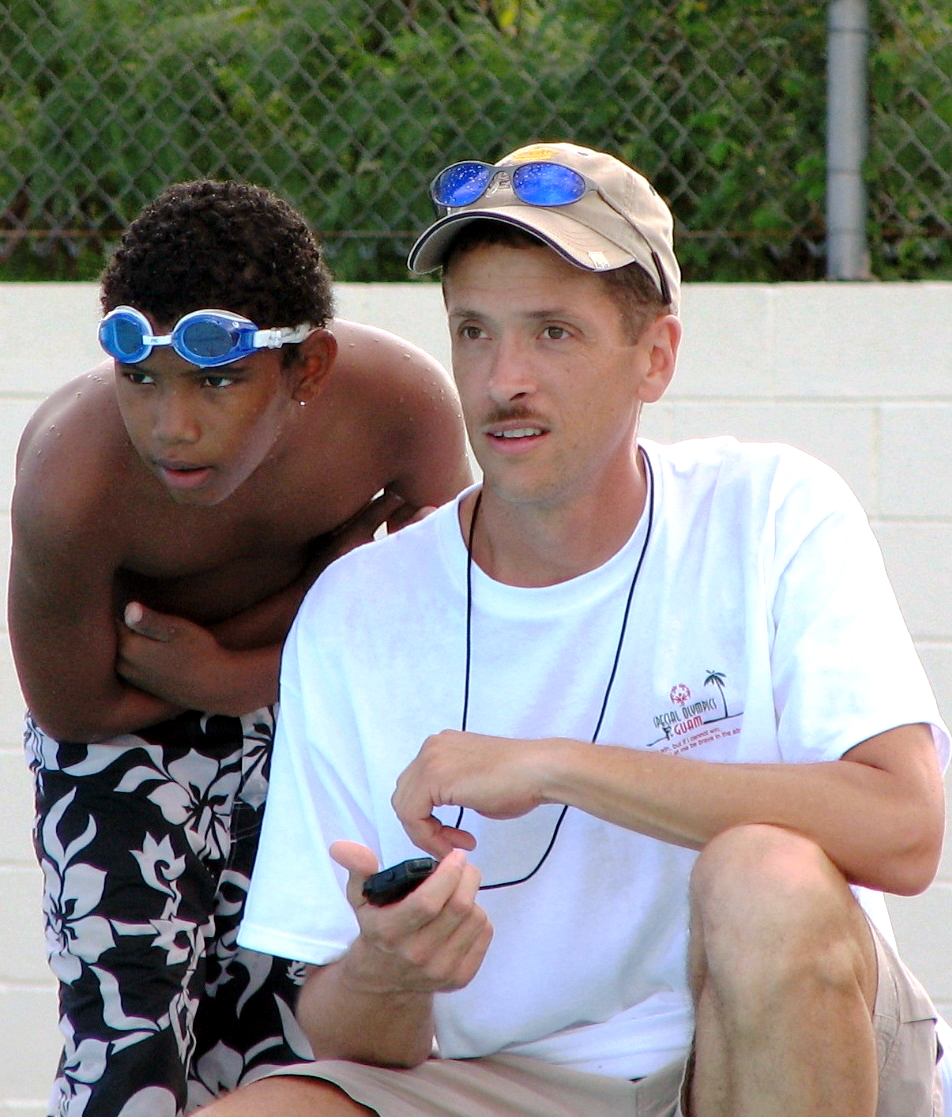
2006 Guam Special Olympics

Master Sgt. Kelly Costa keeps time as athlete Isaac Belajadia watches the action at the 2006 Guam Special Olympics aquatic event on Saturday, June 3, 2006. Sergeant Costa was one of several Airmen from the 36th Expeditionary Aircraft Maintenance Squadron and 393rd Expeditionary Bomb Squadron at Andersen Air Force Base, Guam, who volunteered at the event. Sergeant Costa is assigned to the 36th EAMS.